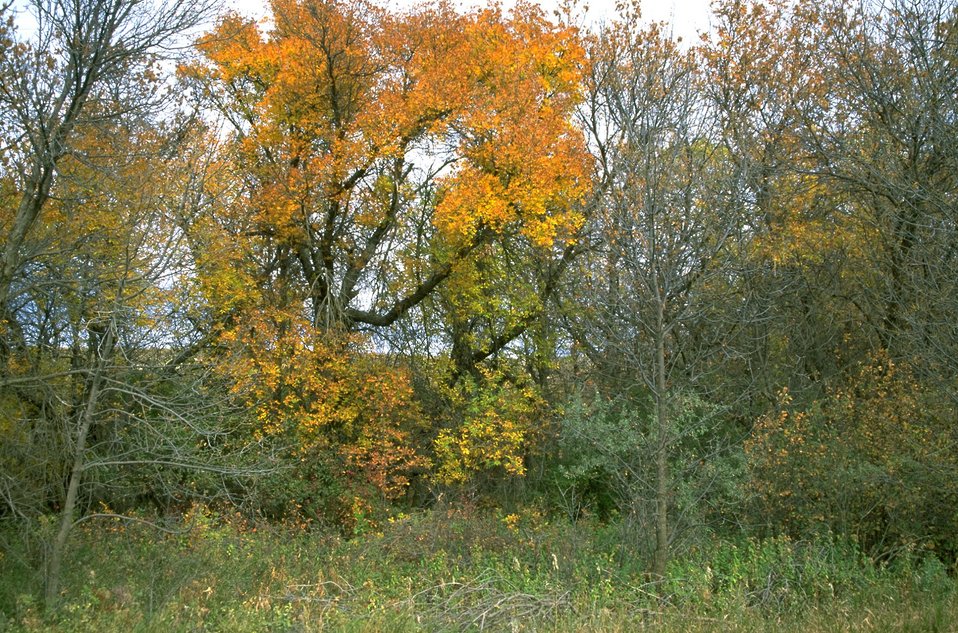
Trees turning to autumn colors